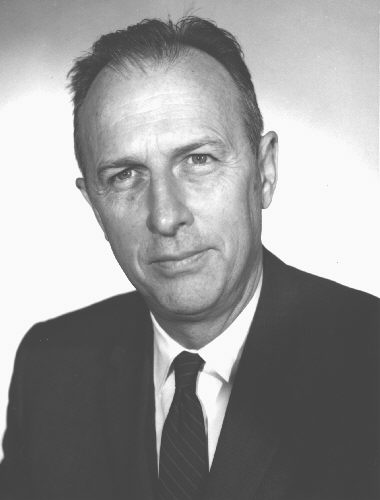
Mark D. Hollis, Sc.D., CDC Chief